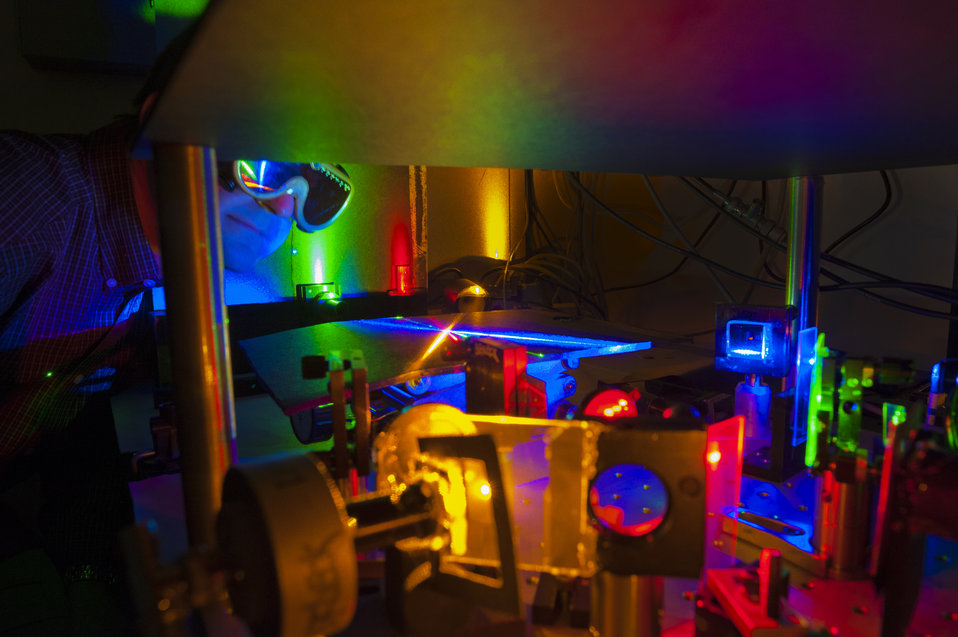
A SANDIA RESEARCHER EXAMINES THE SET-UP USED TO TEST DIODE LASERS AS AN ALTERNATIVE TO LED LIGHTING.